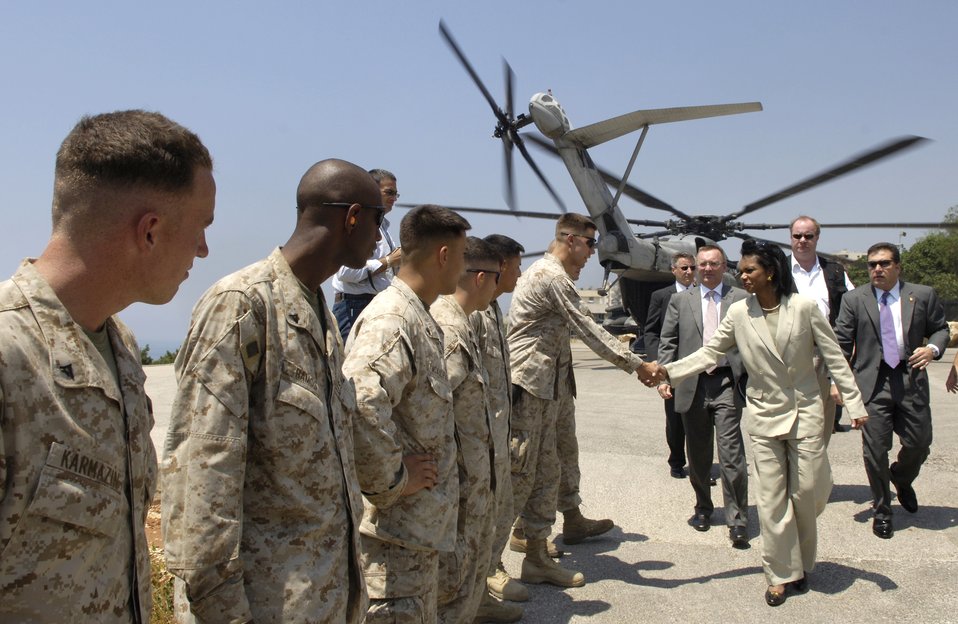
Secretary of State visits Lebanon

Secretary of State Condoleezza Rice greets Marines upon arrival at the U.S. Embassy in Beirut, Lebanon, July 24. Secretary Rice flew in from Cyprus on a Marine CH-53 Sea Stallion helicopter escorted by an Air Force MH-53M Pave Low helicopter from the 352nd Special Operations Group at Royal Air Force Mildenhall.